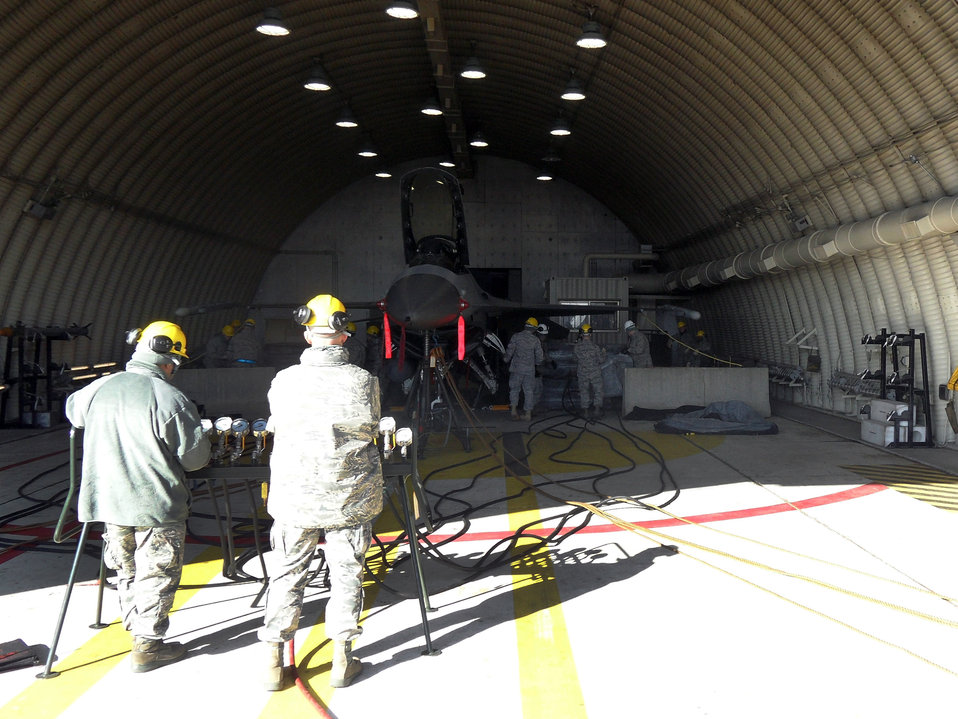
Crash recovery team demonstrates innovation through unique lift operation

51st Maintenance Squadron Transient Alert Crash Recovery team members conduct an airbag lift operation Dec. 11, 2010, at Osan Air Base, South Korea.